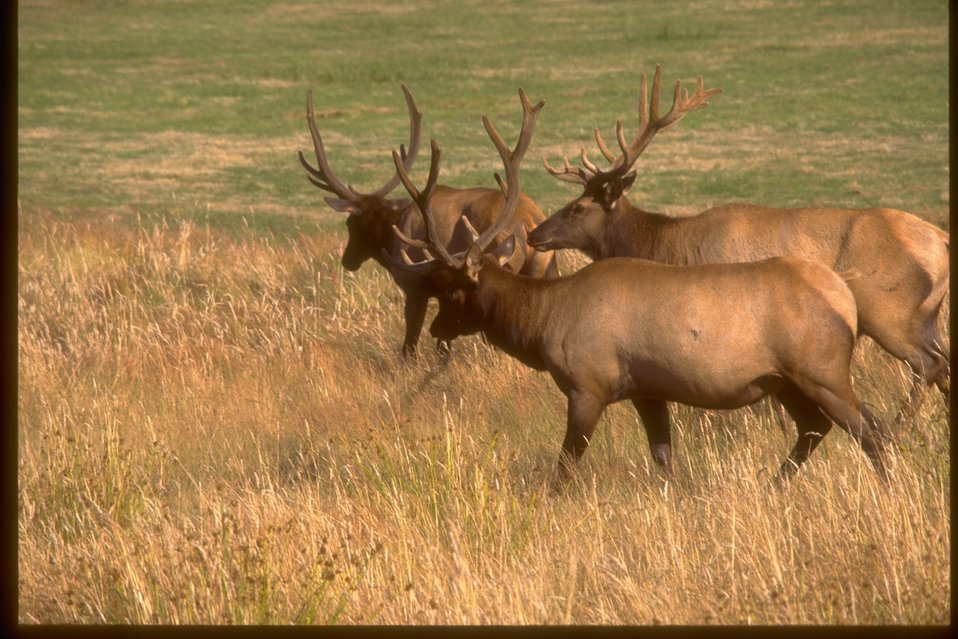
Deen Creek Elk.